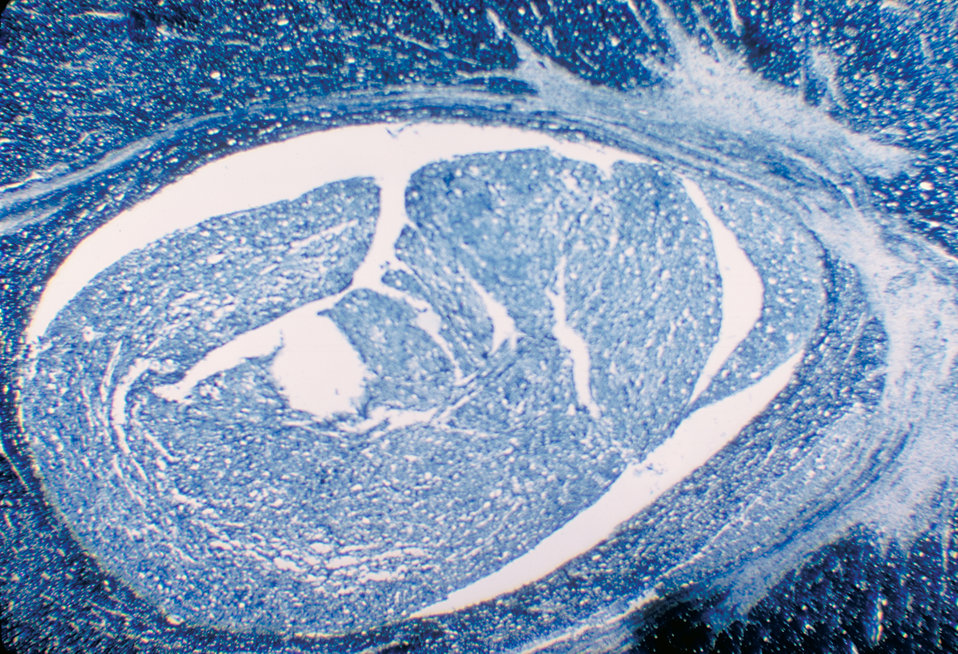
A photomicrograph of the thoracic spinal cord depicting degenerative changes due to Polio Type III.